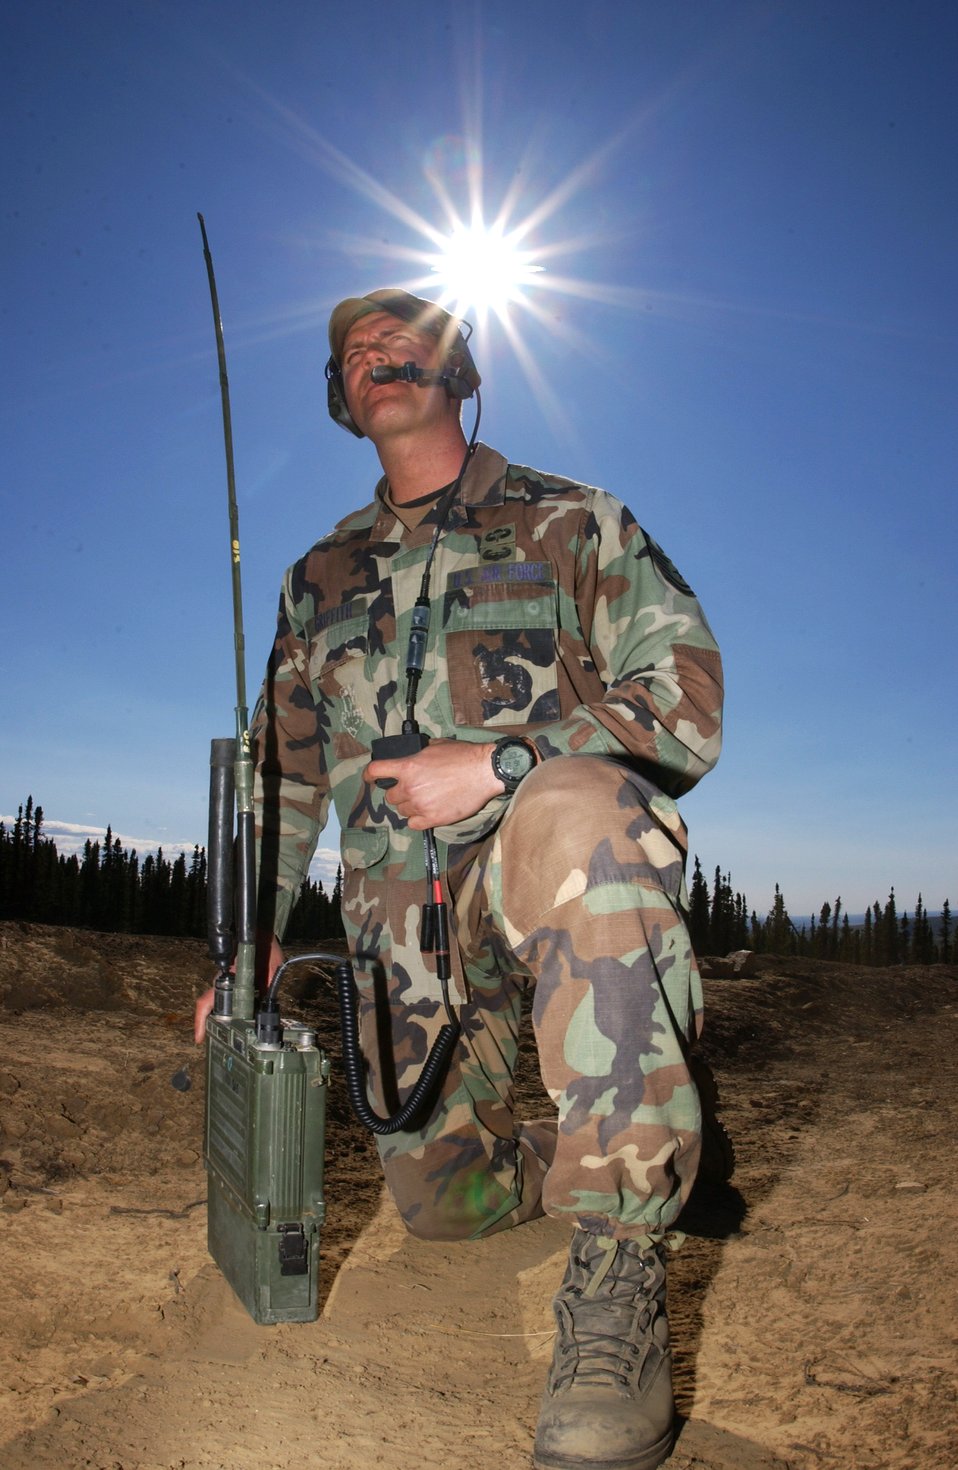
Practice makes perfect during Ursa Minor

Tech. Sgt. Seth Griffith uses a multi-band tactical radio May 16 to